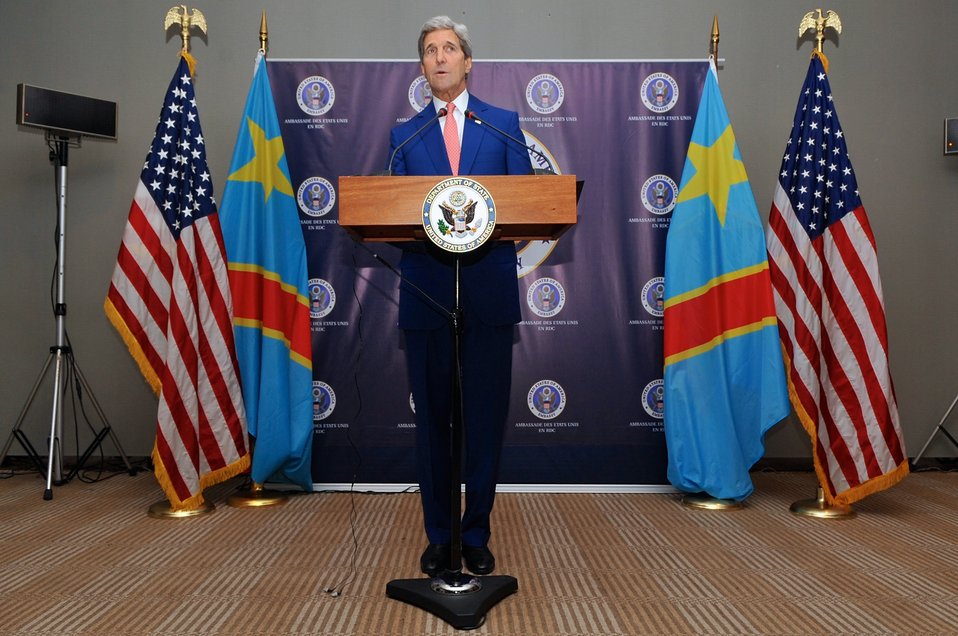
Secretary Kerry Holds News Conference After Meeting With President Kabila of Democratic Republic of Congo

U.S. Secretary of State John Kerry holds a news conference that followed his meeting with Democratic Republic of Congo President Joseph Kabila in Kinshasa on May 4, 2014.